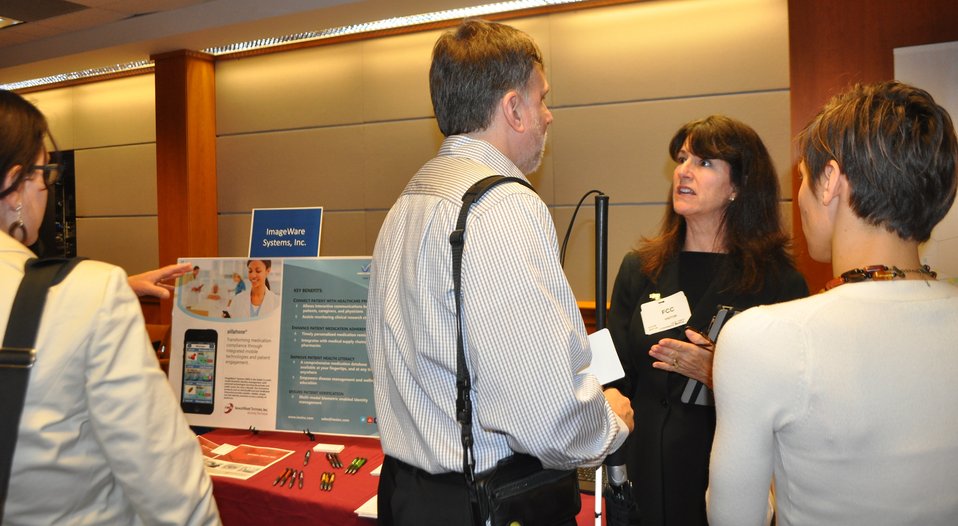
12.6.13 mHealth Innovation Expo

FCC mHealth Innovation Expo.